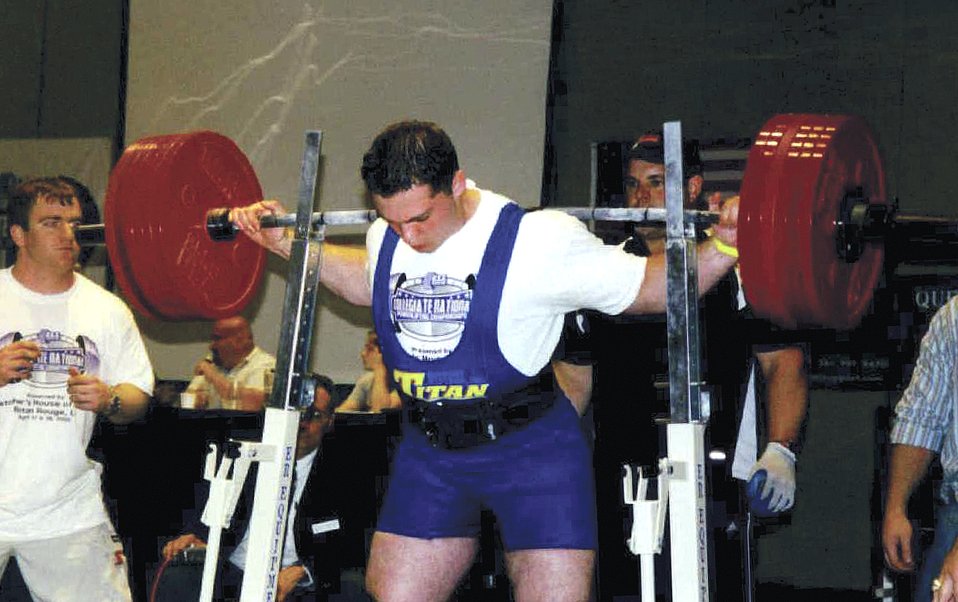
Cadet wins class in Junior World Powerlifting Championships

Air Force Academy Cadet First Class Michael Tuchscherer prepares to lift during a previous competition. He took first place in his weight class during the Junior World Powerlifting Championships Sept. 9 in Sofia, Bulgaria.